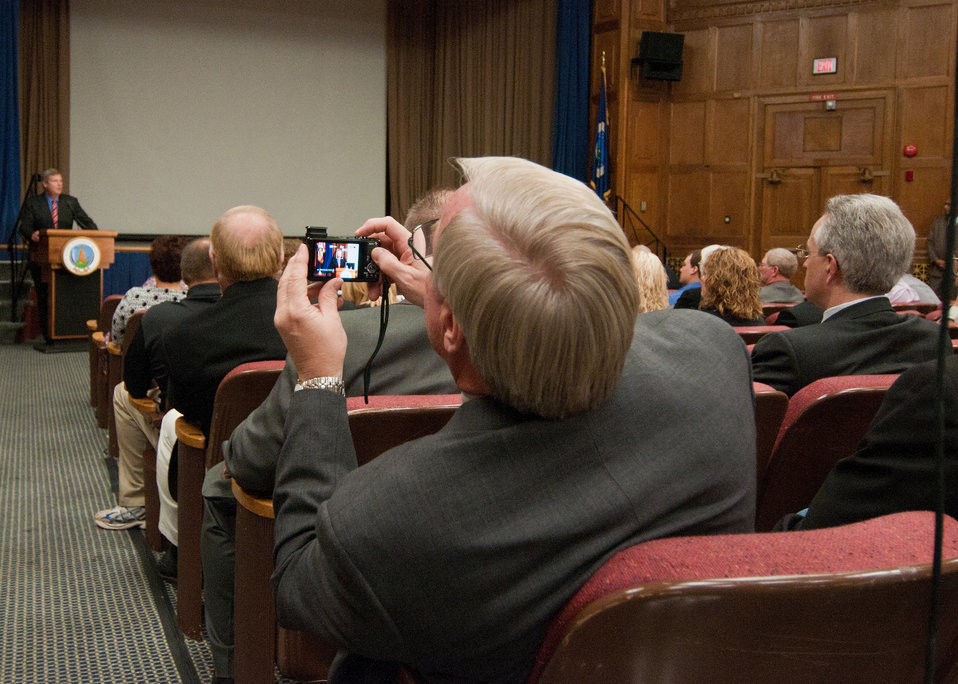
A National Farmer’s Union member photographs Agriculture Secretary Tom Vilsack speaking to the National Farmer’s Union during their annual Fall Legislative Fly-In at the U.S. Department of Agriculture in Washington, D. C. on Monday, Sept. 12, 2011.